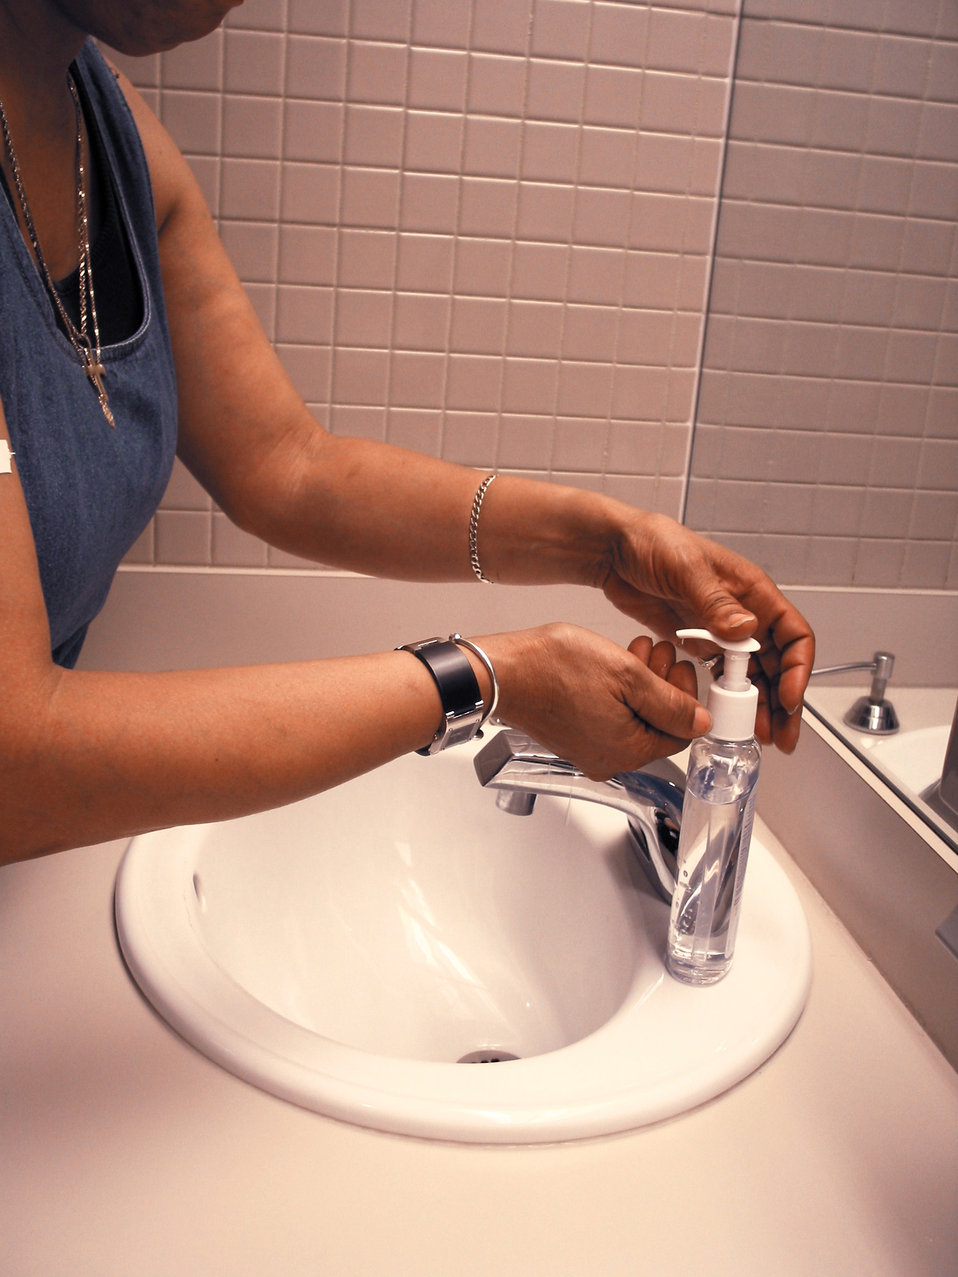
This image demonstrates how a smallpox vaccinee washes her hands after handling her vaccination site bandage.